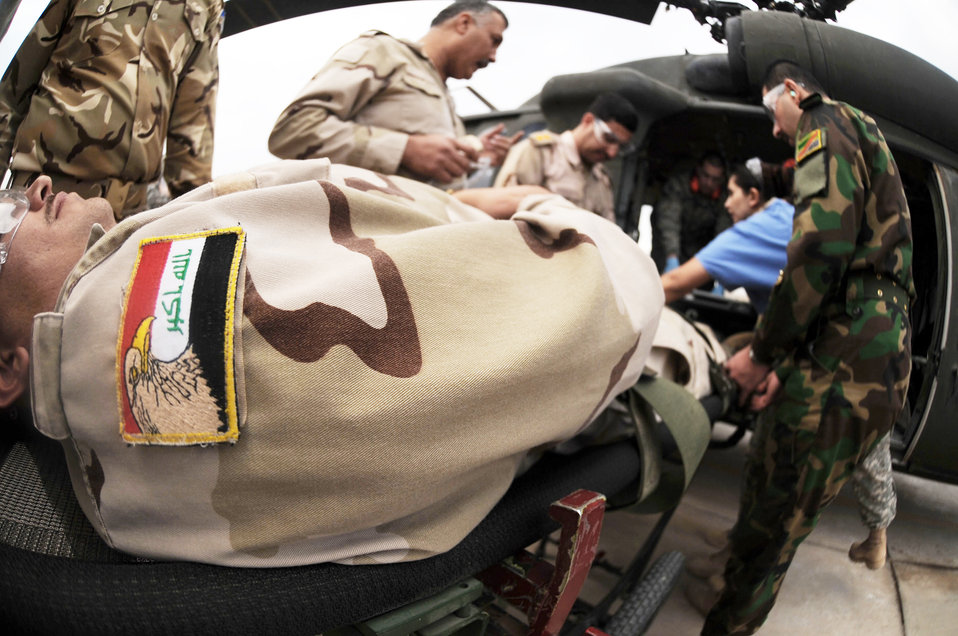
Air Force medics partner with Iraqi Ministry of Defense hospital

Iraqi air force airmen put their skills to the test during medical evacuation training Dec. 21, 2009, at the Air Force Theater Hospital, at Joint Base Balad, Iraq. The purpose of the training is to help Ministry of Defense officials strengthen their health care system for Iraqi troops.